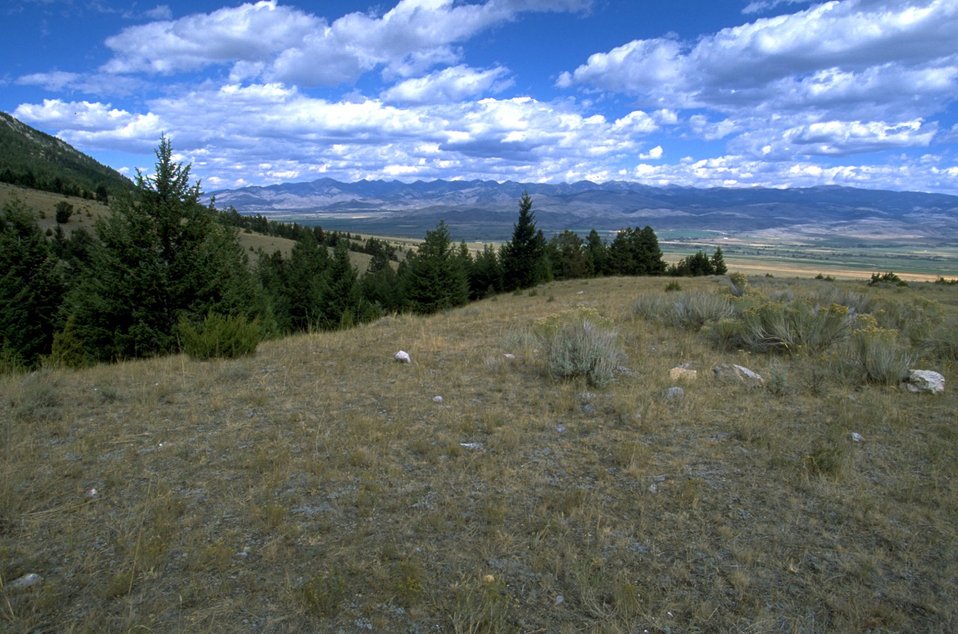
Cloud formations over the Axolotl Lake area